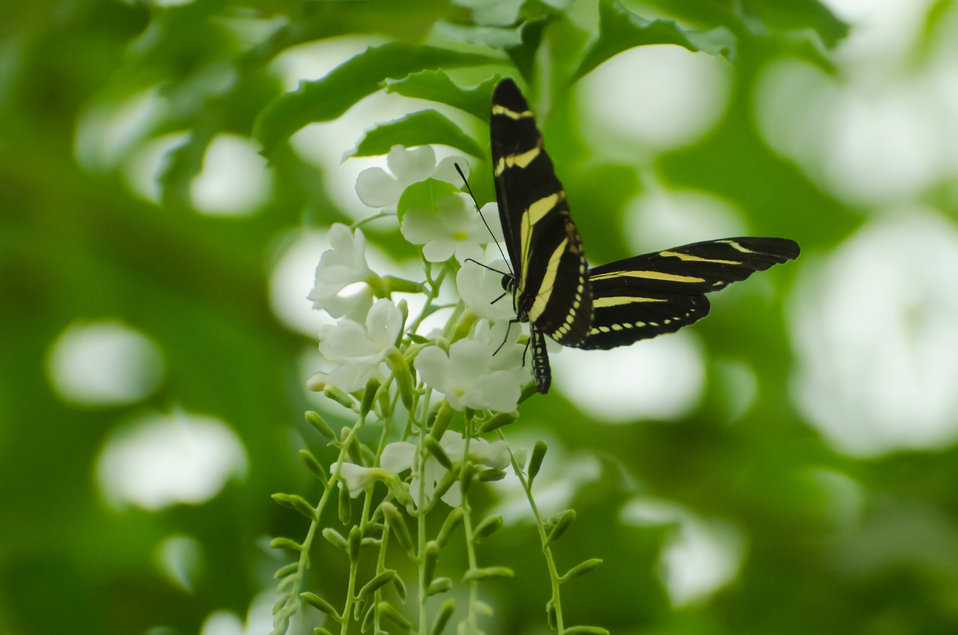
Butterfly

Big tropical butterfly.